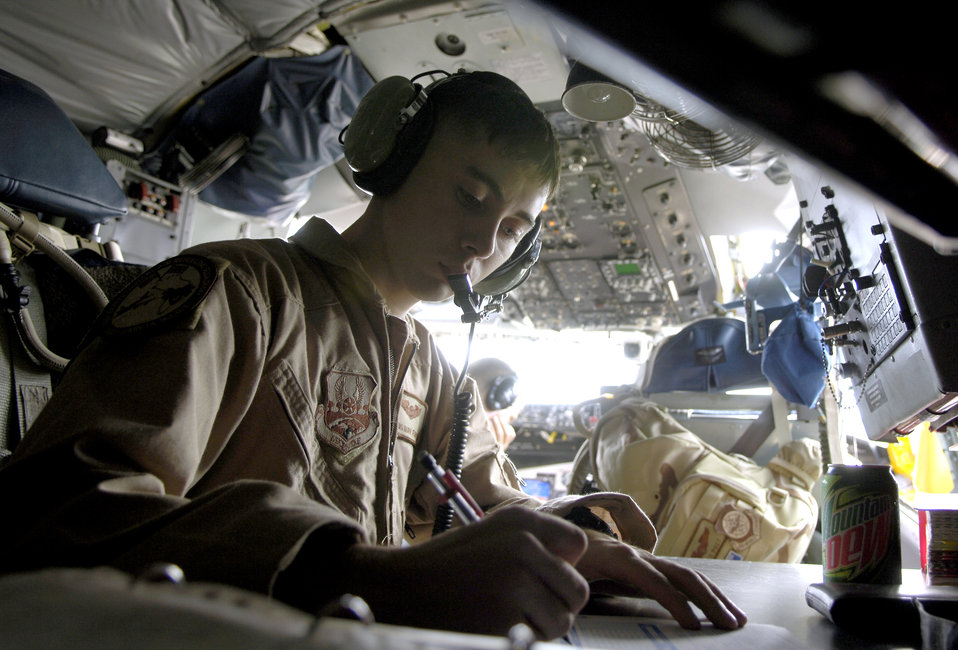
KC-135 bringing fuel to fight

Senior Airman Mark Fiorotto accomplishes preflight paperwork before a refueling mission for a B-1B Lancer over the Indian Ocean on Friday, July 7. Airman Fiorotto is a boom operator on a KC-135 Stratotanker stationed with the 40th Air Expeditionary Group in support of Operation Enduring Freedom.